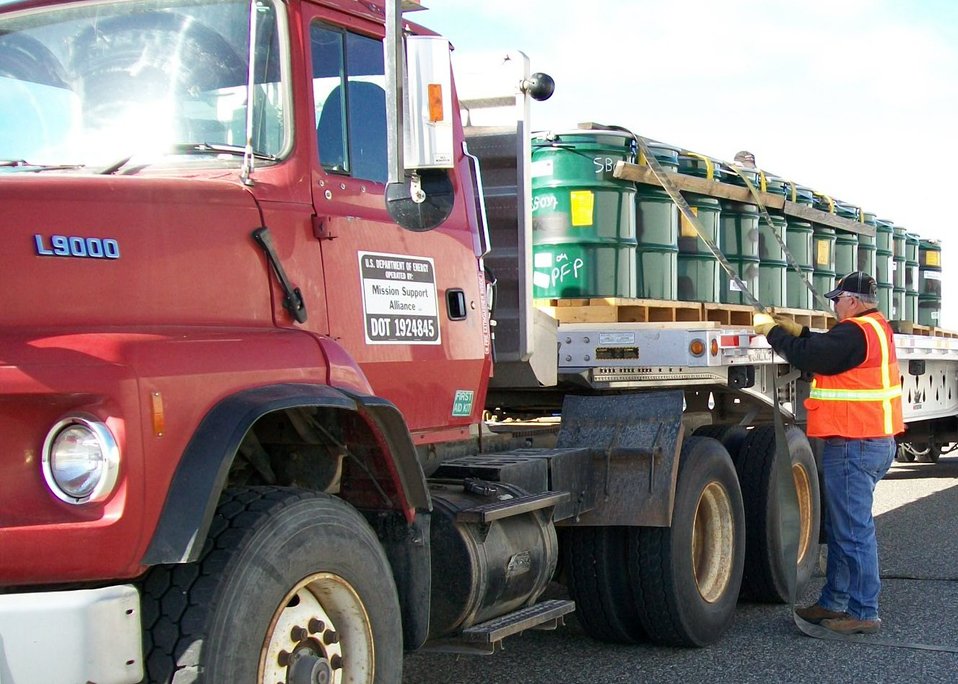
Hanford mixed low-level waste shipment prep

Workers secure a shipment of mixed low-level waste at the Hanford Site.